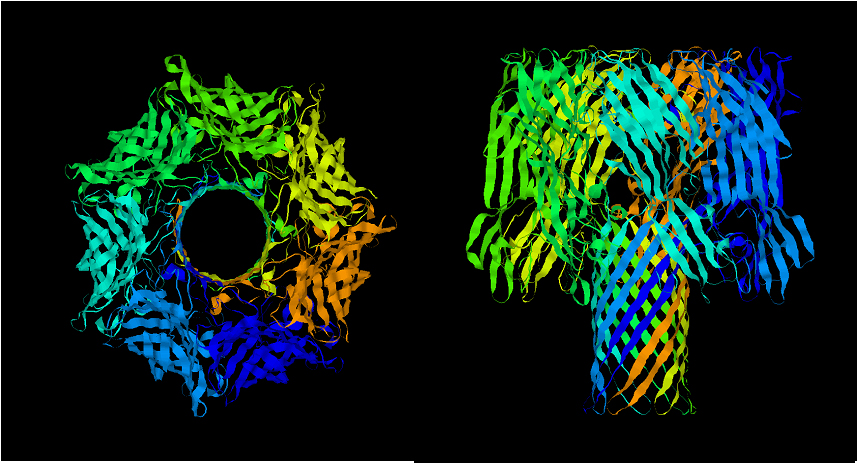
Biological Nanopore

Crystal structure of a biological nanopore. NIST researchers are studying ways in which biological or synthetic nanopores may one day be used to analyze DNA or to detect chemical or biological agents. (Data Credit: Song, et al. 1996. Science 274, 1859)